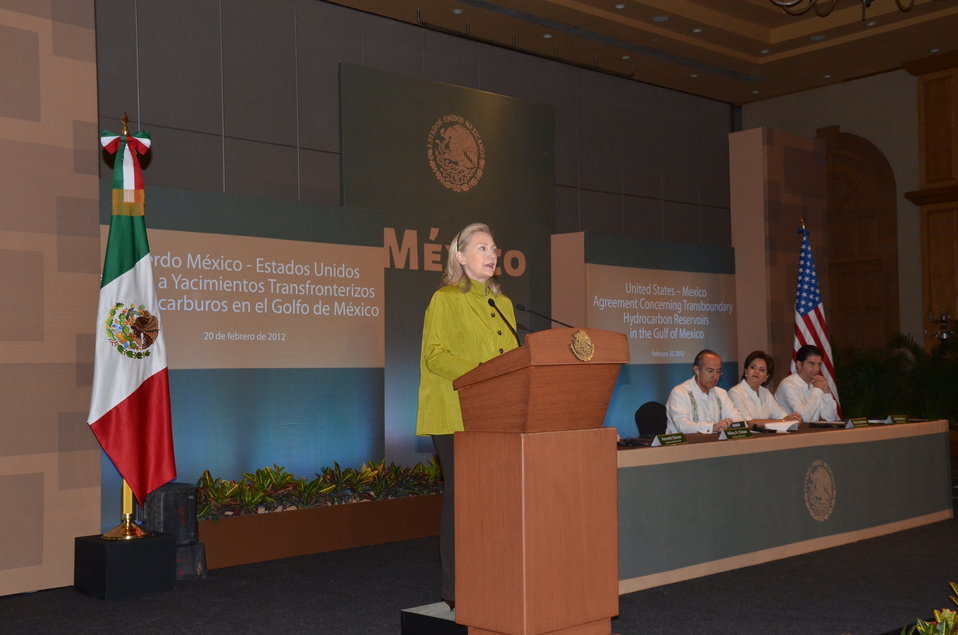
Secretary Clinton Delivers Remarks

U.S. Secretary of State Hillary Rodham Clinton delivers remarks before signing the United States-Mexico Agreement Concerning Transboundary Hydrocarbon Reservoirs in the Gulf of Mexico, in Los Cabos, Mexico, on February 20, 2012. Also pictured in the photo, left to right, are: U.S. Interior Secretary Ken Salazar, Mexican President Felipe Calderon, Mexican Foreign Minister Patricia Espinosa, and Mexican Secretary of Energy Jordy Herrera.